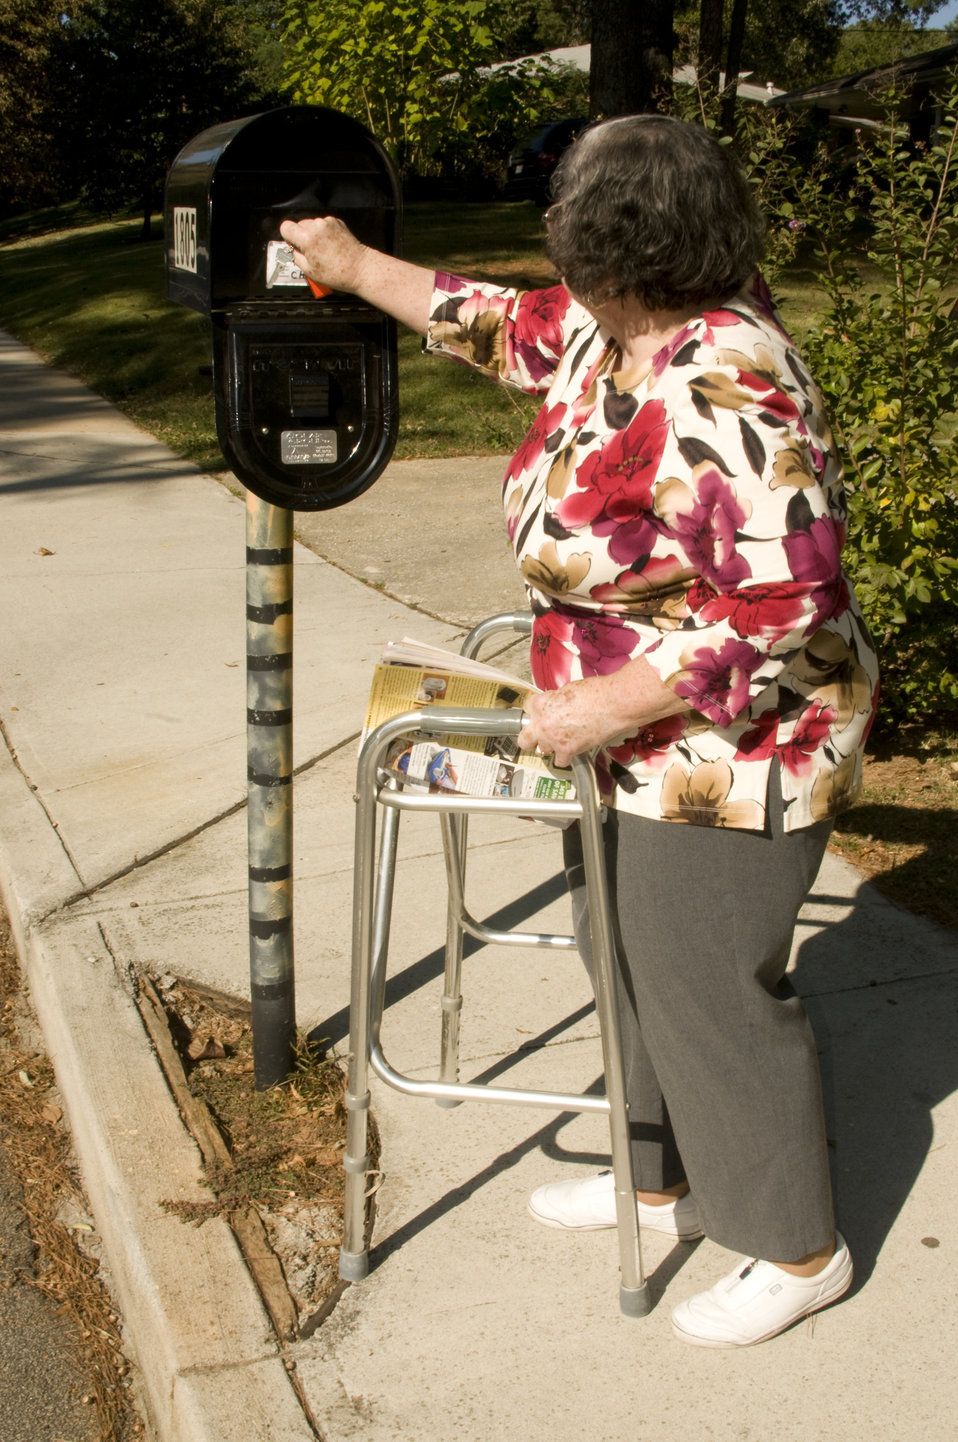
The woman pictured here is a rheumatoid arthritis patient, and is living with this disease, still doing her best to carry on with her day to day activities. With the help of her walker, she was shown retrieving her mail form a street-side mailbox.